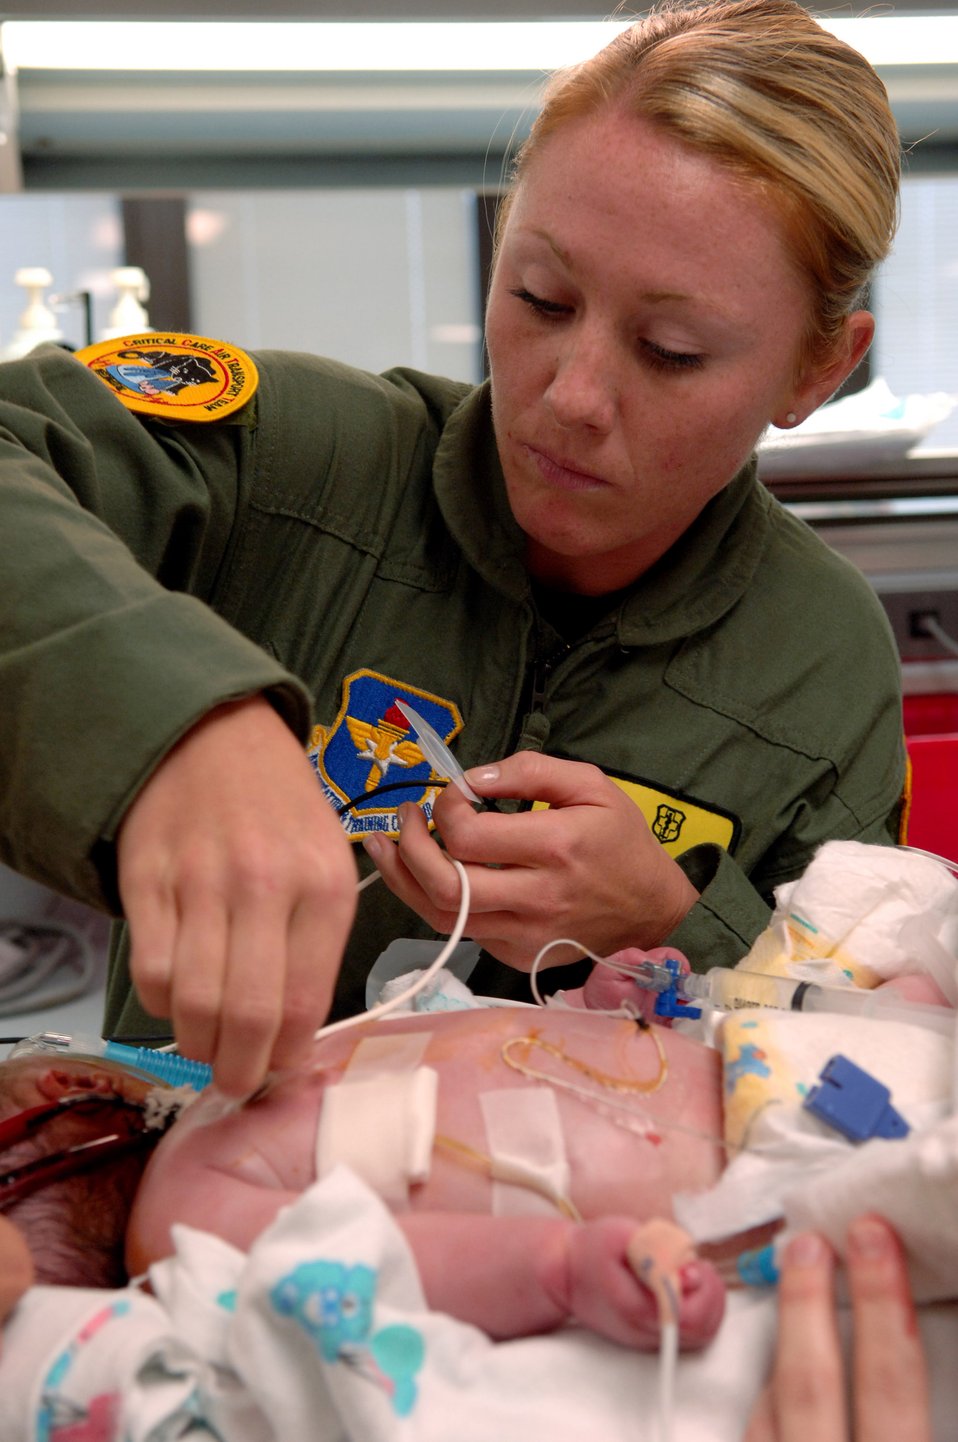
ECMO medical team transports newborn from Puerto Rico

Senior Airman Kris Vensel attaches probes to monitor the heart of 3-day-old Stuart Parker after he was placed on a transportable Extracorporeal Membrane Oxygenation unit on July 21 in San Juan, Puerto Rico. An ECMO team comprised Air Force and Army medical specialists from the Wilford Hall Medical Center at Lackland Air Force Base, Texas, flew to Puerto Rico to transport Stuart to San Antonio for more advanced care. Airman Vensel is a respiratory therapist at the Wilford Hall Medical Center.